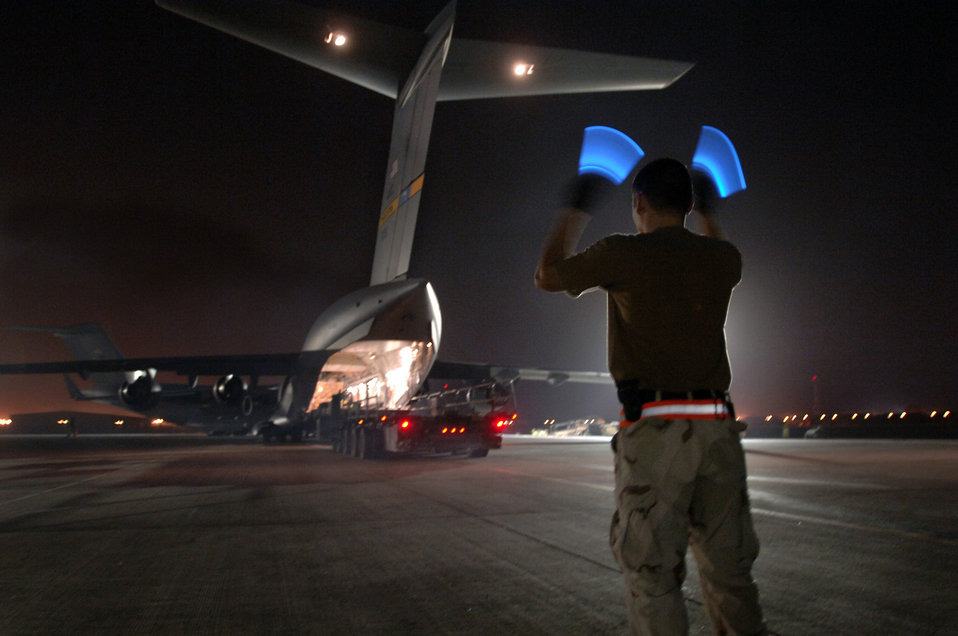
Operation Enduring Freedom

Airman 1st Class Arnold Pe√±a marshals out an aircraft loader after loading pallets of bombs onto a C-17 Globemaster III.